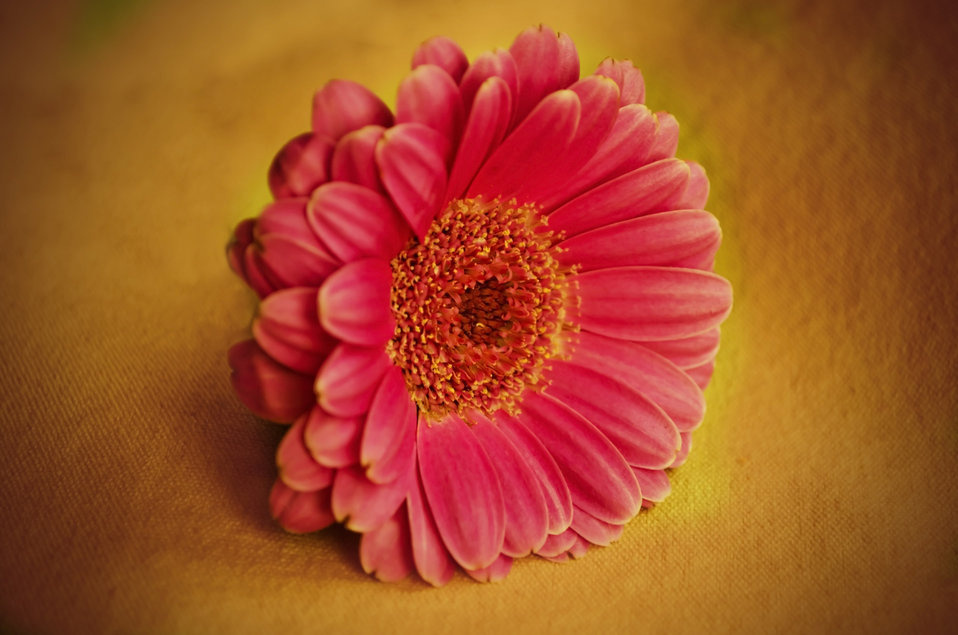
Pink flower.